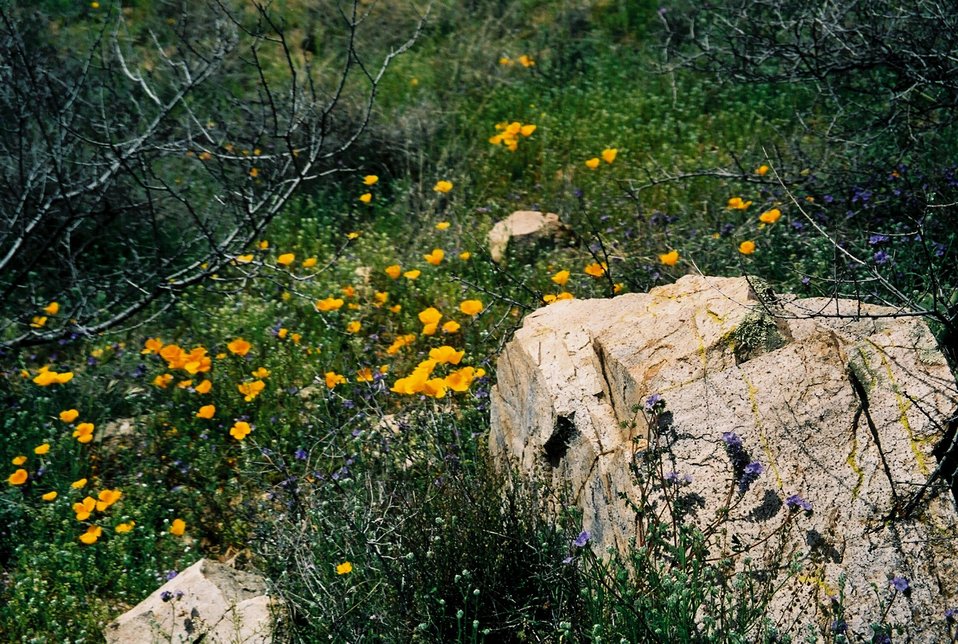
Many different kinds of beautiful wildflowers grow in the Agua Fria National Monument.